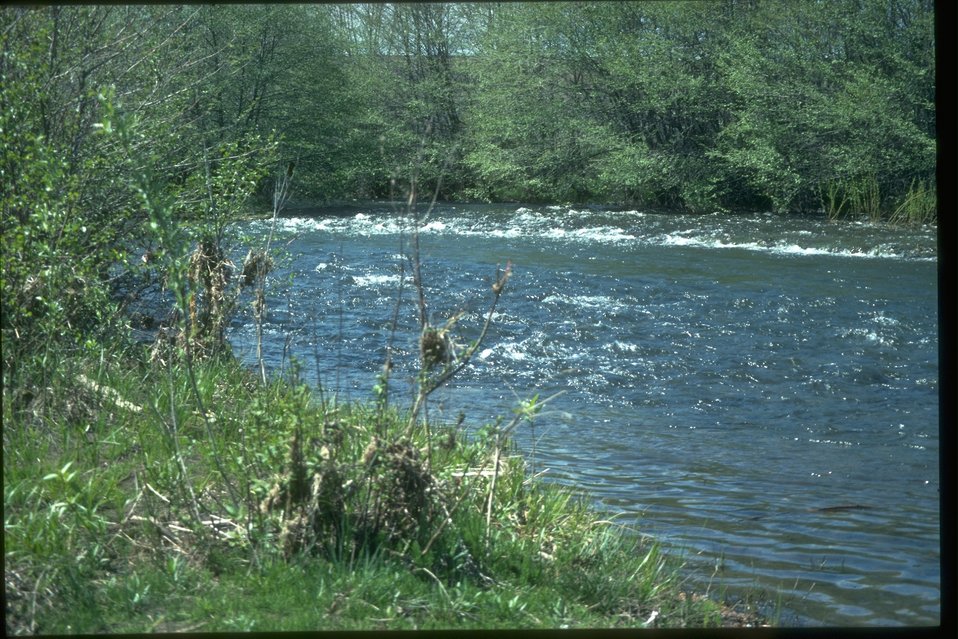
Flood debris in riparian vegetation.